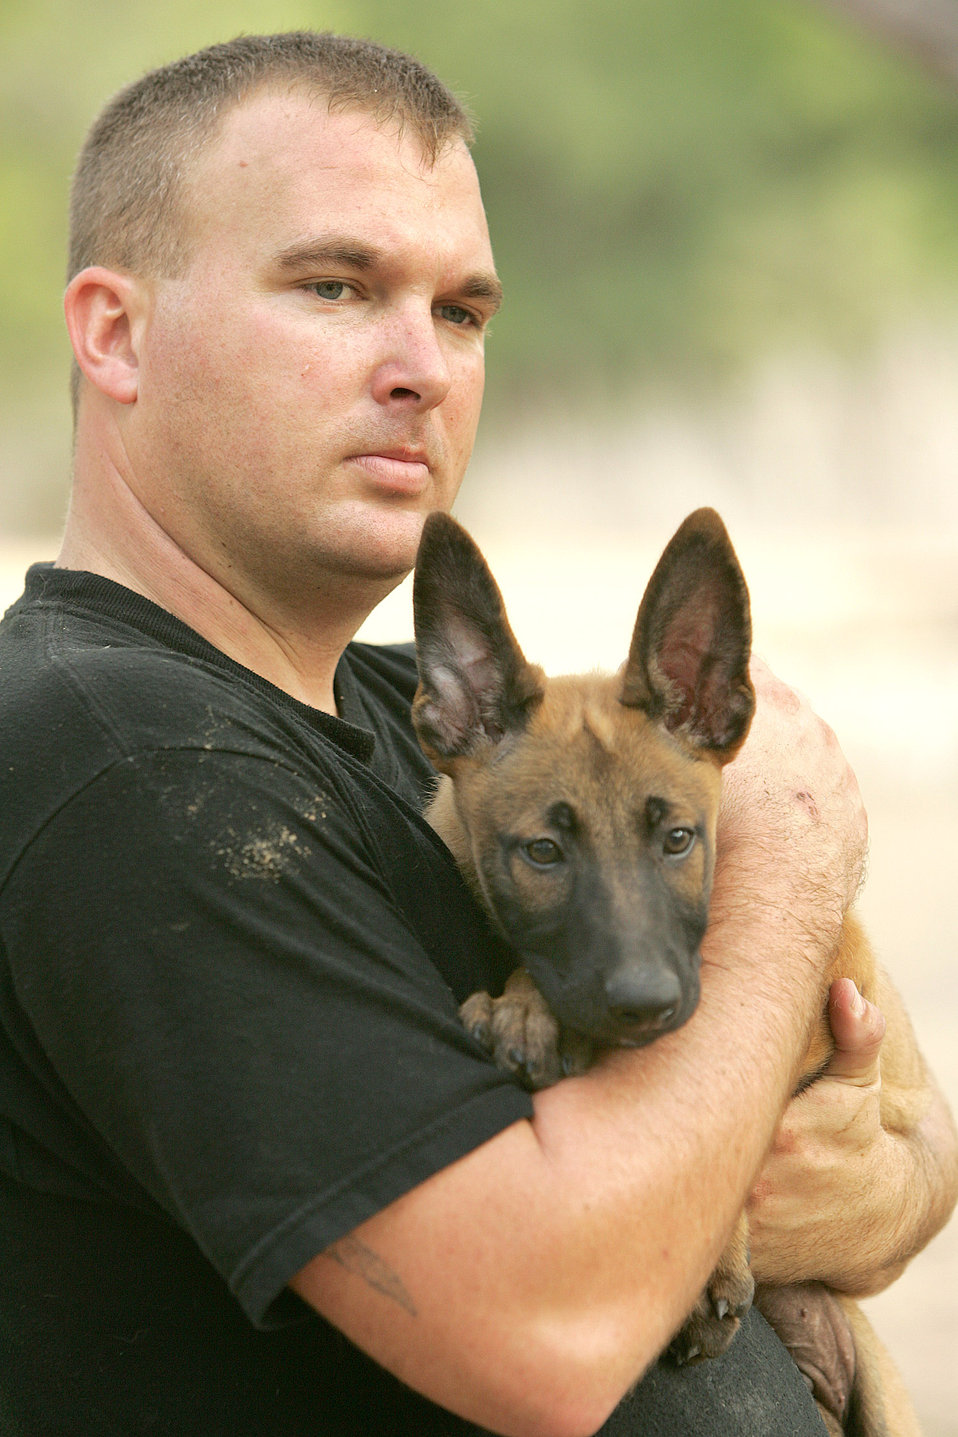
Total Force MWD training

Nine-week-old Falcor, a Belgian Malinois, relaxes in the arms of Staff Sgt. David Adcox, a military working dog trainer at Lackland Air Force Base, Texas, Aug. 29. Falcor is part of the